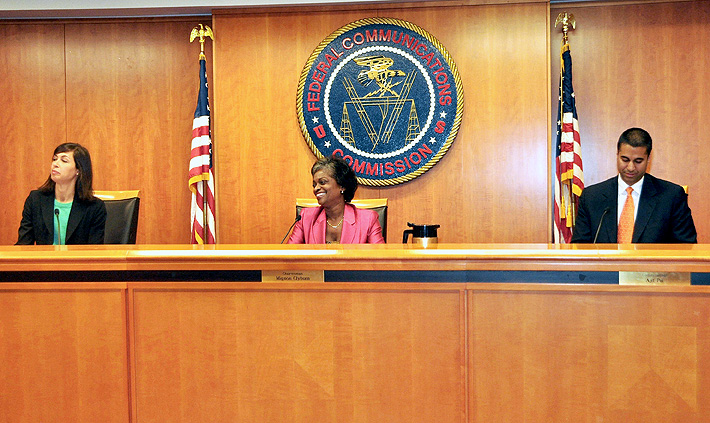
FCC Chair Clyburn convenes FCC open meeting as first woman Chair 6-27-2013

Commissioner Jessica Rosenworcel, Acting Chairwoman Mignon Clyburn, & Commissioner Ajit Pai at June Open Commission Meeting.